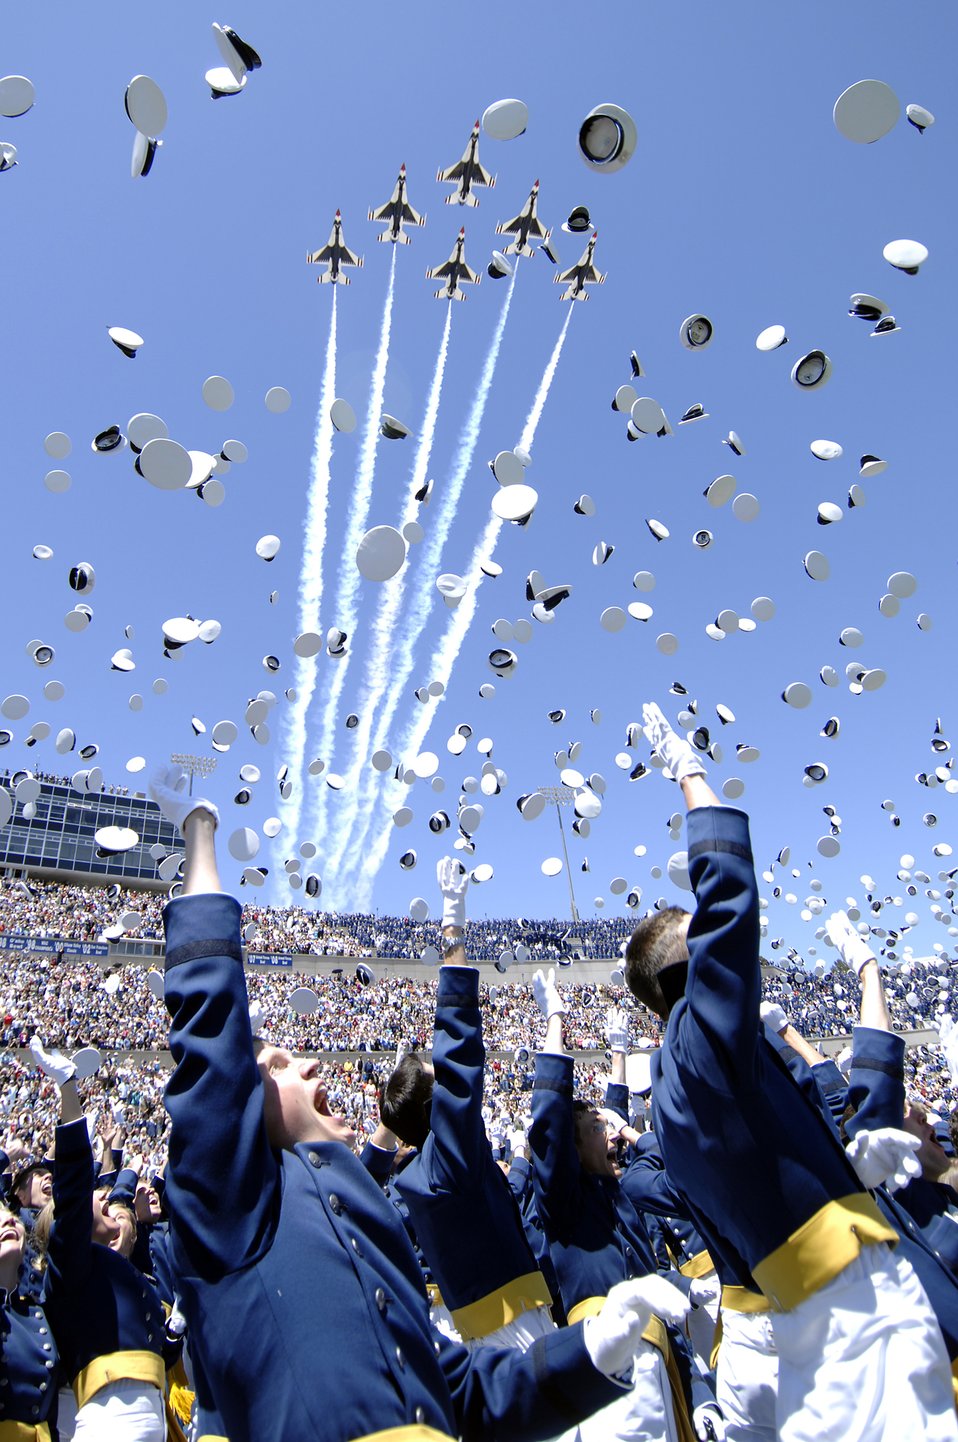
We made it!

Newly commissioned second lieutenants commemorate their achievement by tossing their hats as the Air Force Thunderbirds fly over Falcon Stadium May 27 during the 2009 U.S. Air Force Academy graduation.